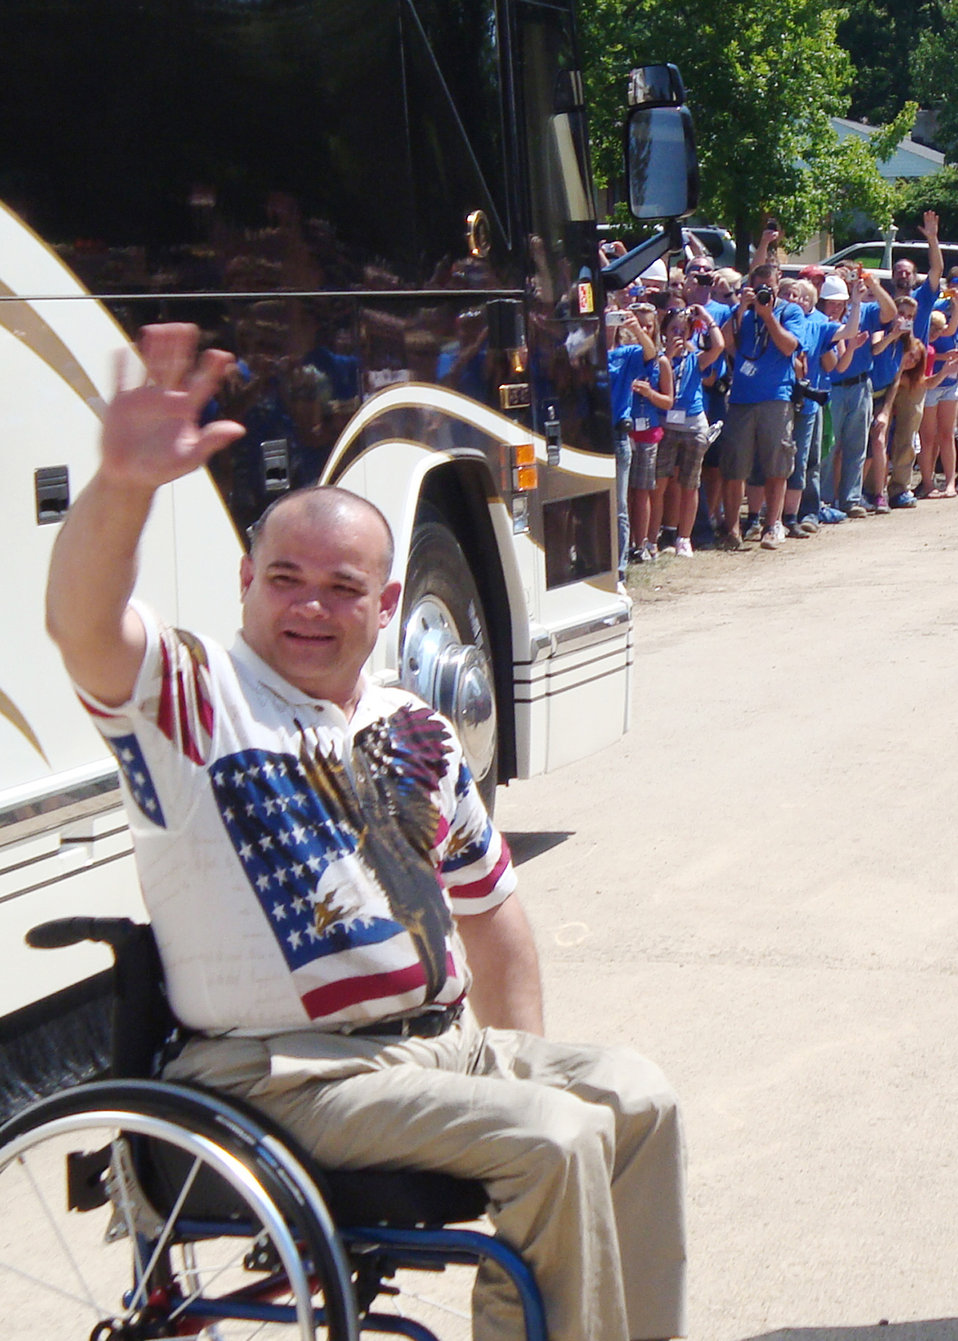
Air Force family's 'Extreme' home revealed

James Terpenning waves to volunteers and onlookers after seeing his new home unveiled as part of the television show